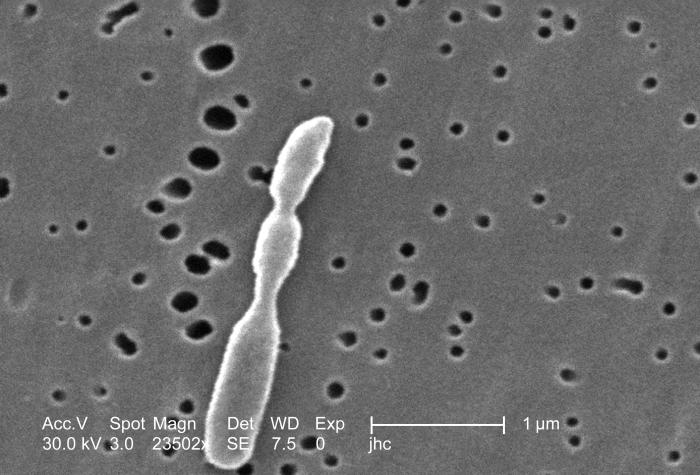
Magnified 23,502x, this scanning electron micrograph (SEM) depicted a highly enlarged view of a Ralstonia mannitolilytica bacterium, which was harvested from a pure culture. Note that in this particular instance, the bacterium is in the process of undergoing replication, which when completed, will give rise to three separate bacteria.